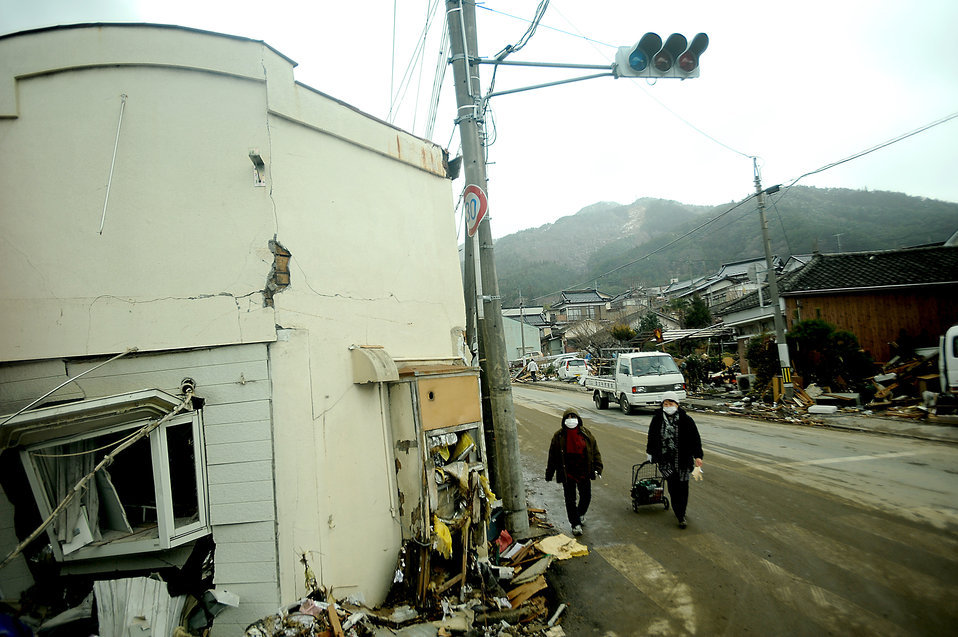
OPERATION TOMODACHI

Local Japanese walk the streets that are littered with debris and wreckage that is piled up on March 16, 2011 in Ofunato, Japan. A 9.0 Earthquake hit Japan on March 11, 2010 that caused a Tsunami that destroyed anything in its path.